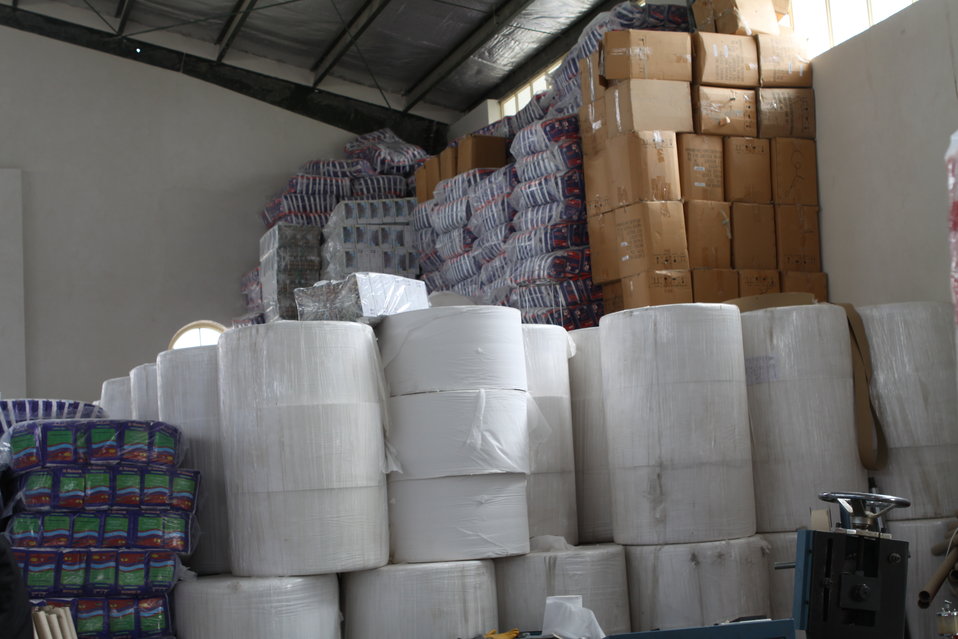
100525 Hirat Marble Conference 820